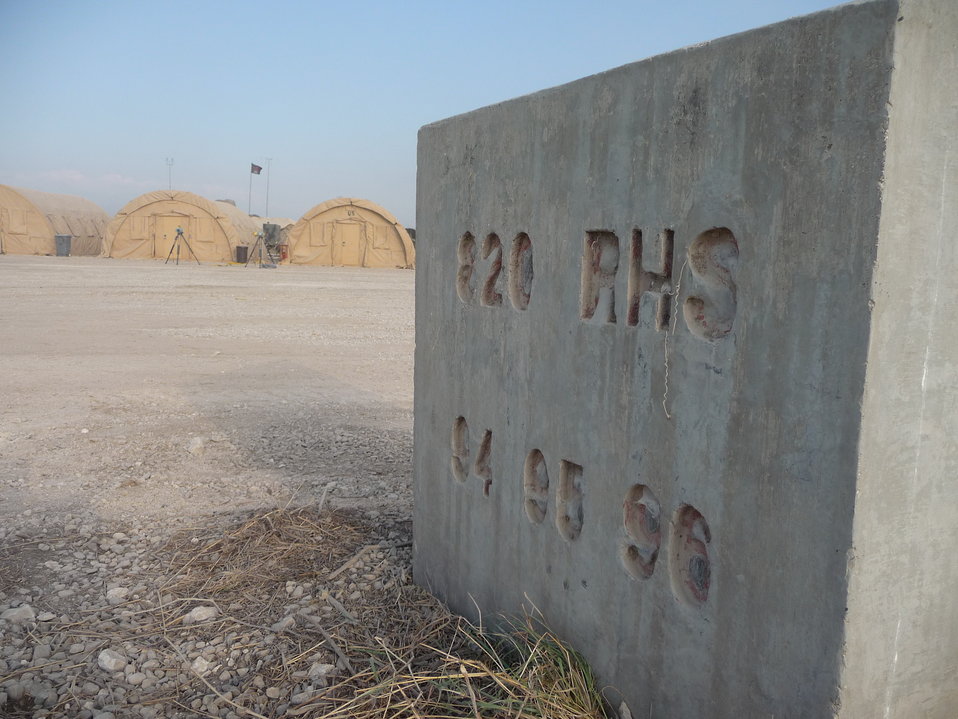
Airmen rediscover RED HORSE legacy in Haiti

A concrete block etched with